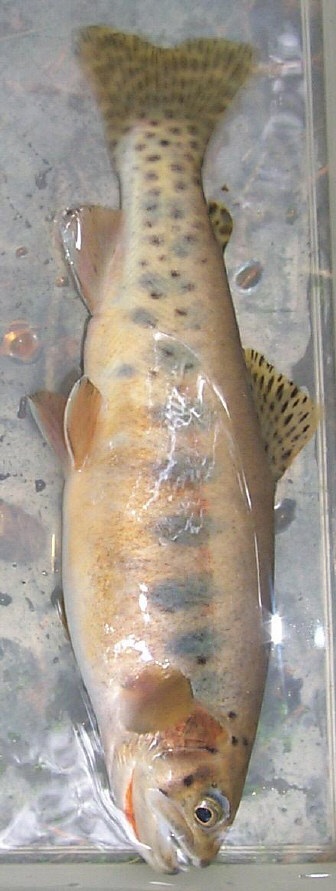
Cutthroat Salmon Field Office UCSC Upper Columbia Salmon Clearwater District